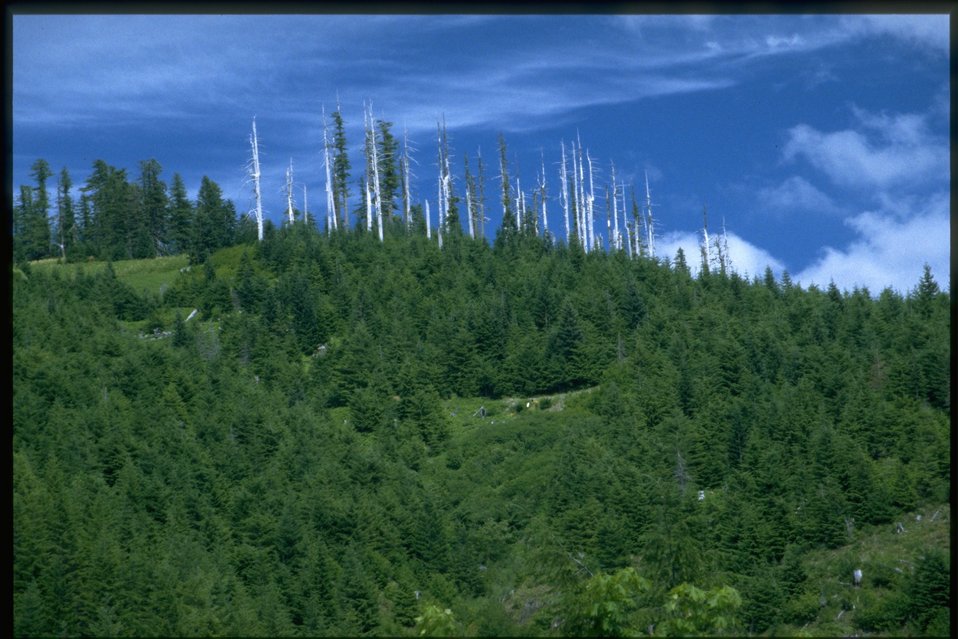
Scenic view from Mt. Horeb.